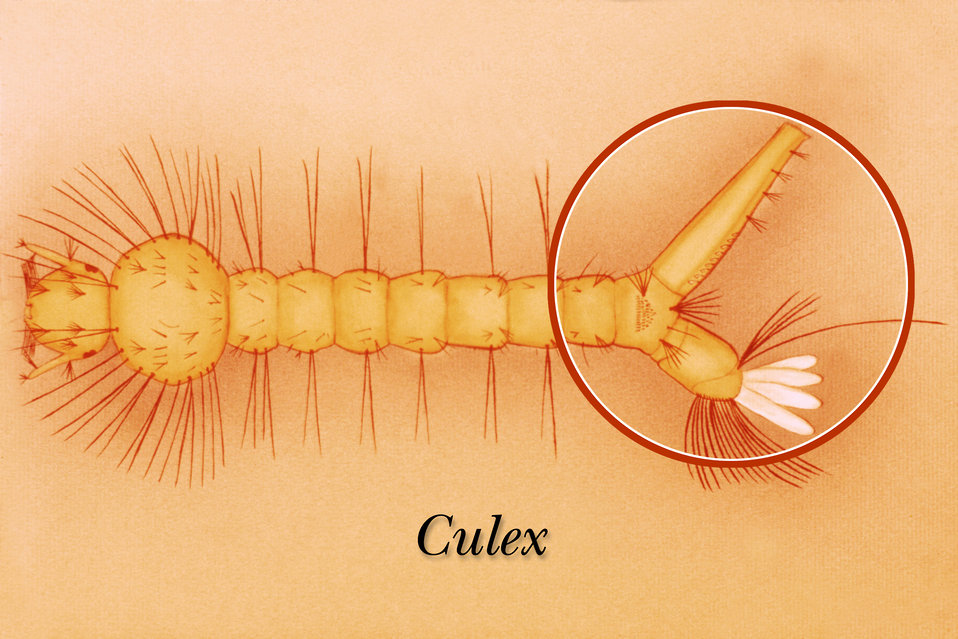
An illustration of a Culex mosquito larva identifying the terminal abdominal segments.